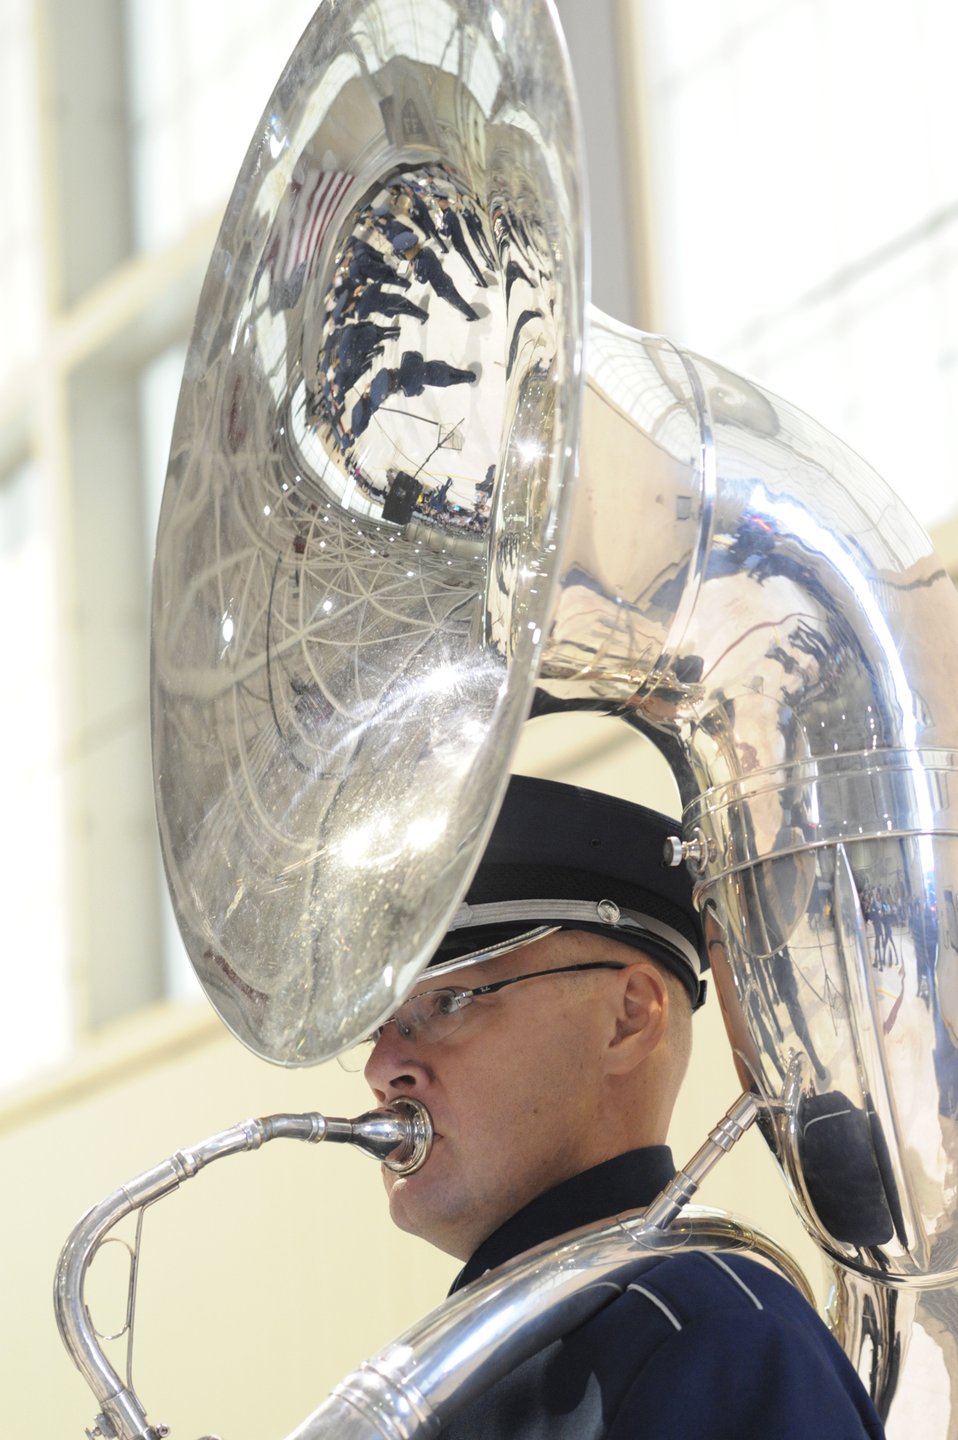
Bright and shiny music

Staff Sgt. Chris Moore plays during the Air Combat Command change of command ceremony Sept. 10, 2009, at Langley Air Force Base, Va. He is with the U. S. Air Force Heritage of America Band.